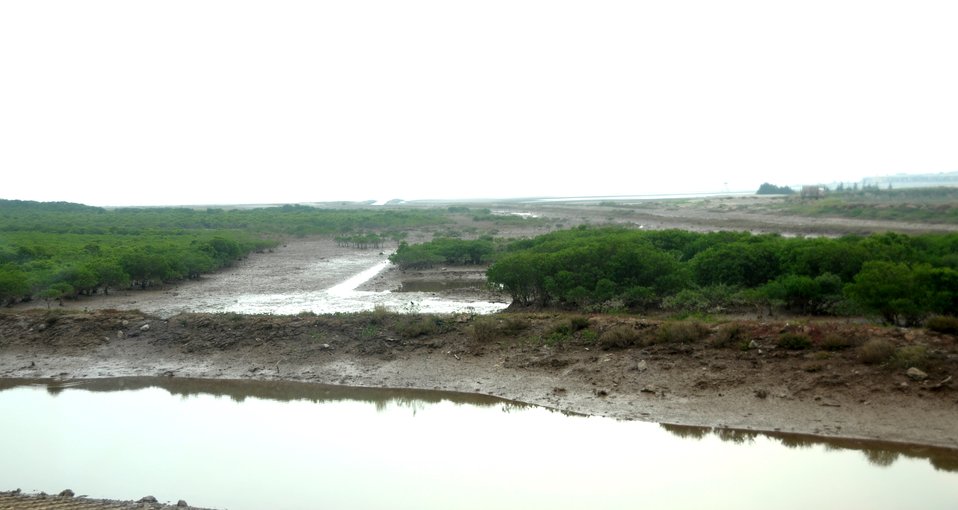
Mangrove forests in Nam Dinh Province.

Quat Lam, Nam Dinh. January 16, 2014.